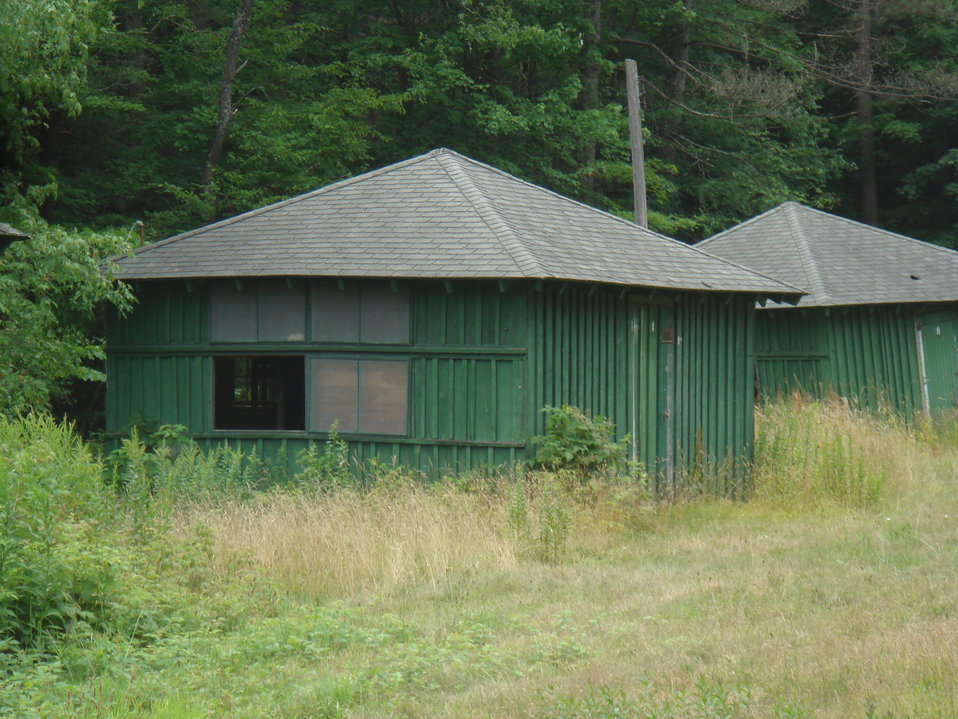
This is a old cabin at group camp 10 (Camp Carlton).